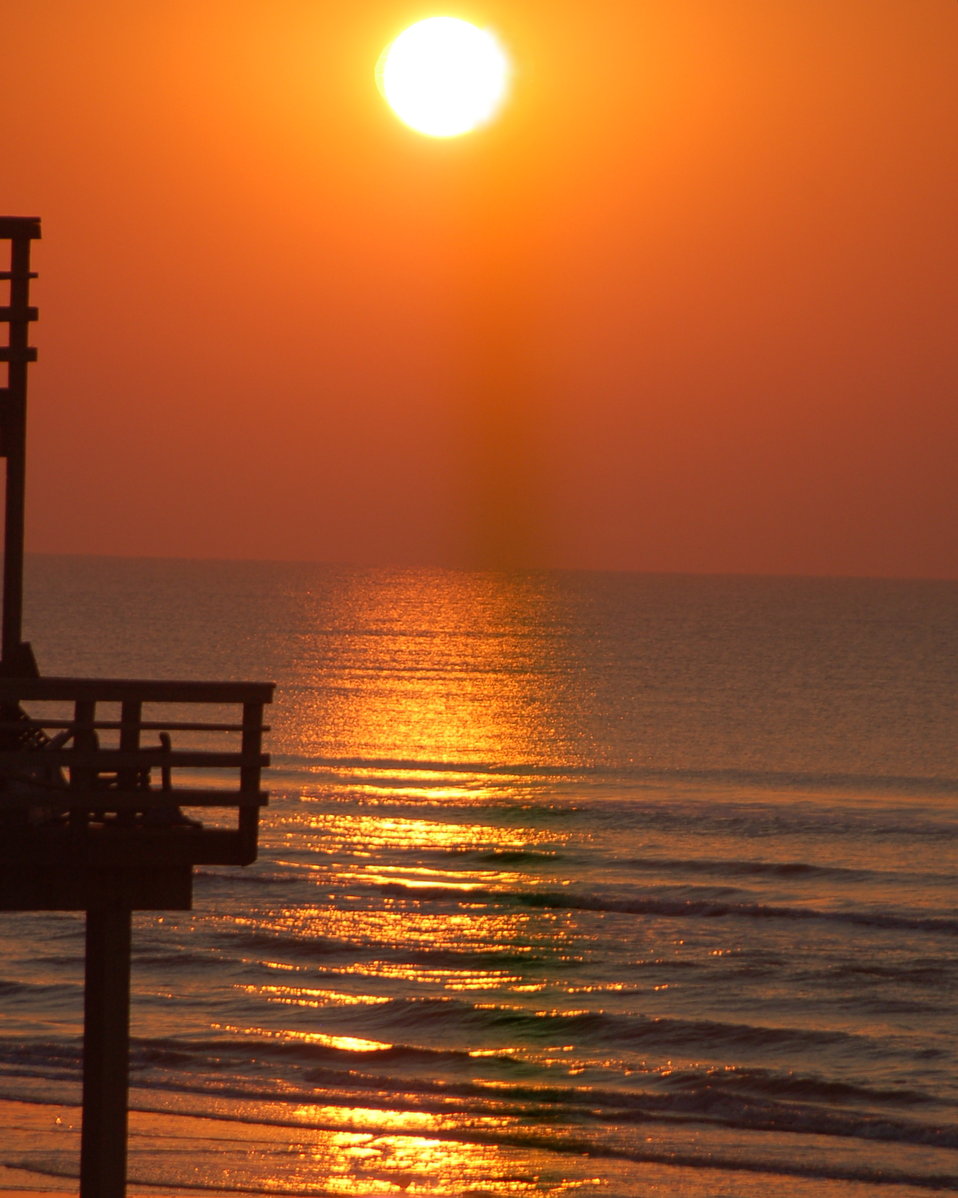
Texas Sunrise after Ike 0106